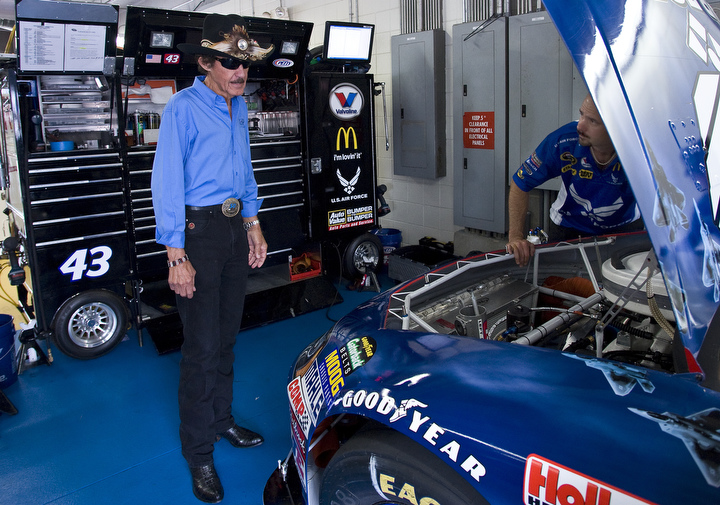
Coca-Cola 600

NASCAR legend Richard Petty checks the status of the #43 Air Force Dodge Charger, one of four cars he oversees under Richard Petty Motorosports brand May 23 before NASCAR's Coca-Cola 600 Sprint Cup race at Lowe's Motor Speedway, Charlotte, N.C.